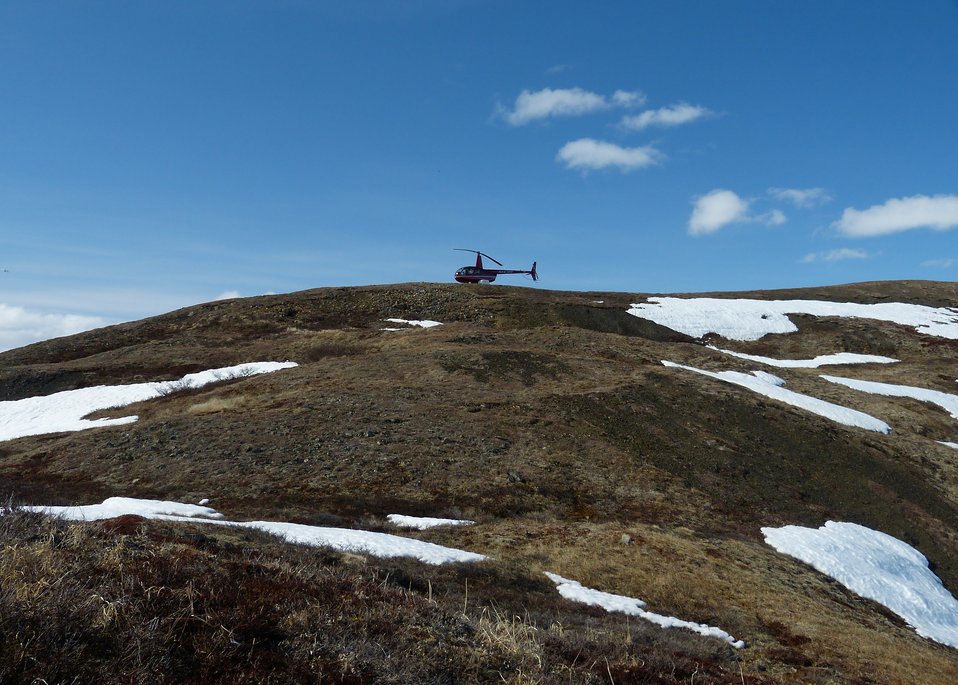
Kilbucks 5-15-2013 KSowl (121)

Cliff-nesting raptor survey, Kilbuck Mountains, Yukon Delta National Wildlife Refuge

Photo credit: Kristine Sowl,
USFWS, YDNWR